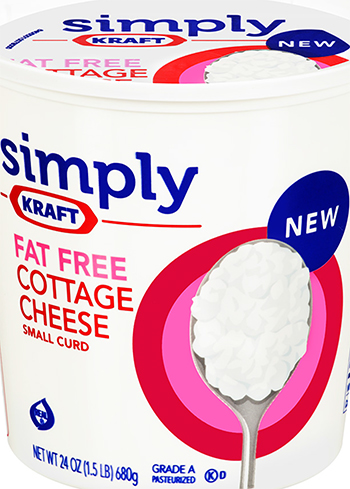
RECALLED – Cottage Cheese products

May 17, 2014 – Product Recall – Kraft Foods Group Voluntarily Recalls Select Cottage Cheese Products Due to Out-of-Standard Storage Temperatures
Certain Knudsen Cottage Cheese, Breakstone’s Cottage Cheese, Simply Kraft Cottage Cheese and Daily Chef Cottage Cheese Products Included in the Recall
.